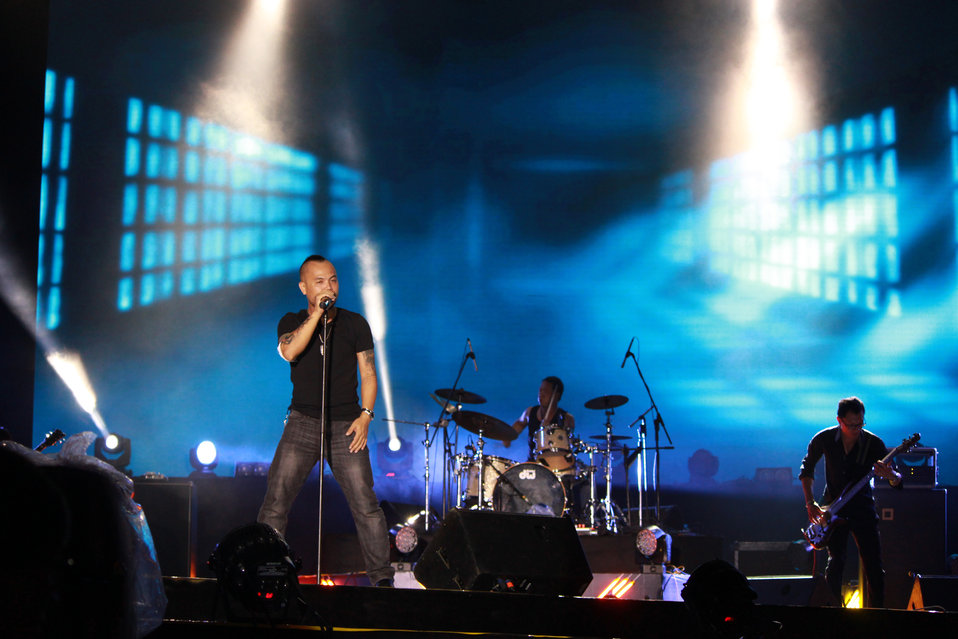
Tran Lap of Vietnam's top rock band Buc Tuong joins local and international artists at MTV Exit concert in Hanoi to fight against human traffickinng

A great concert that attracts 40,000 fans in My Dinh Stadium in Hanoi with strong messages against human trafficking.